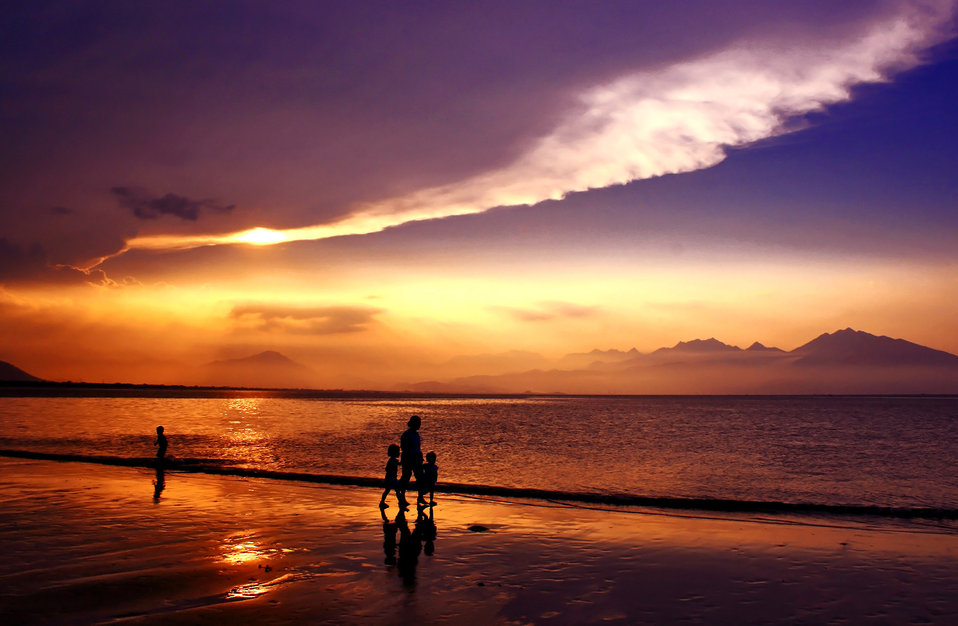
Sunset #12

Sunset on the bay of danang, central vietnam..